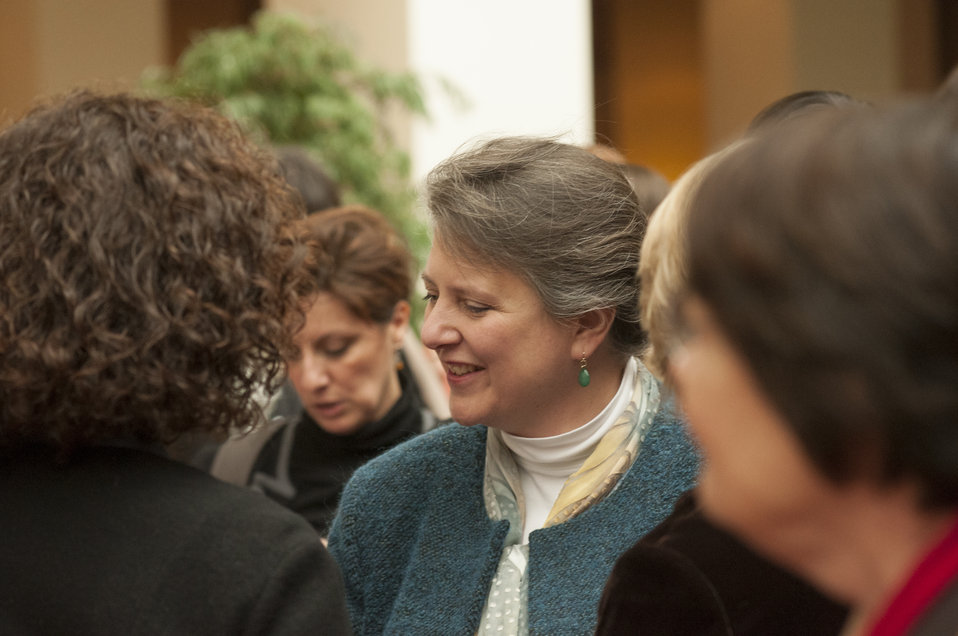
The U.S. Department of Agriculture (USDA) 2013 Agricultural Outlook Forum was held at the Crystal Gateway Marriott Hotel in Arlington, VA on Friday, Feb. 22, 2013. Agriculture Deputy Secretary Kathleen Merrigan participated in the Women in Agriculture-Speed Networking Event, which encouraged and promoted the participation of women in American agriculture.